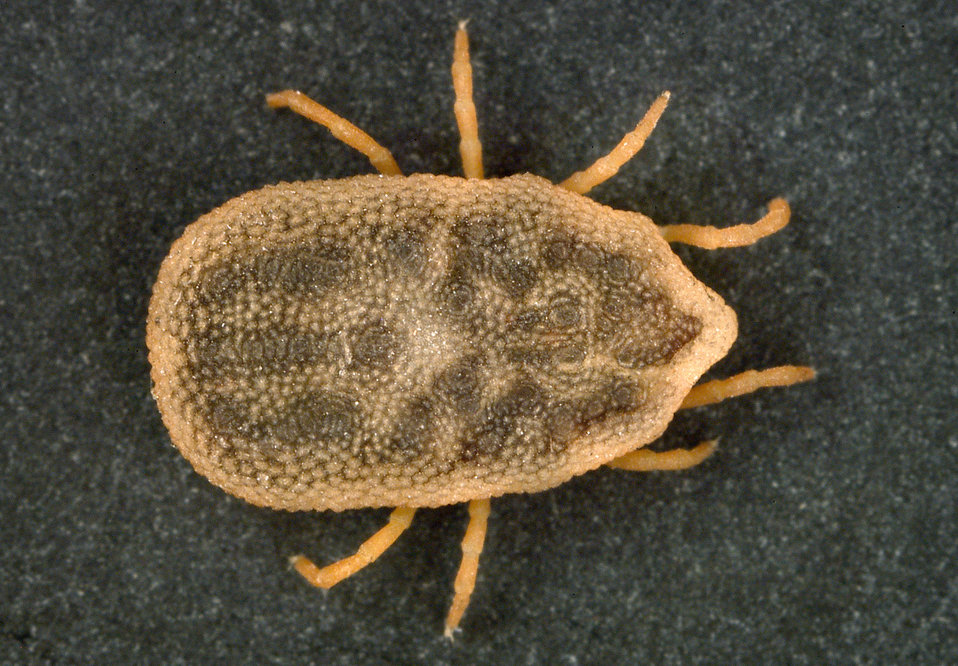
This is a dorsal view of the 'soft tick' Carios kelleyi, formerly Ornithodoros kelleyi, or the 'Bat Tick'.